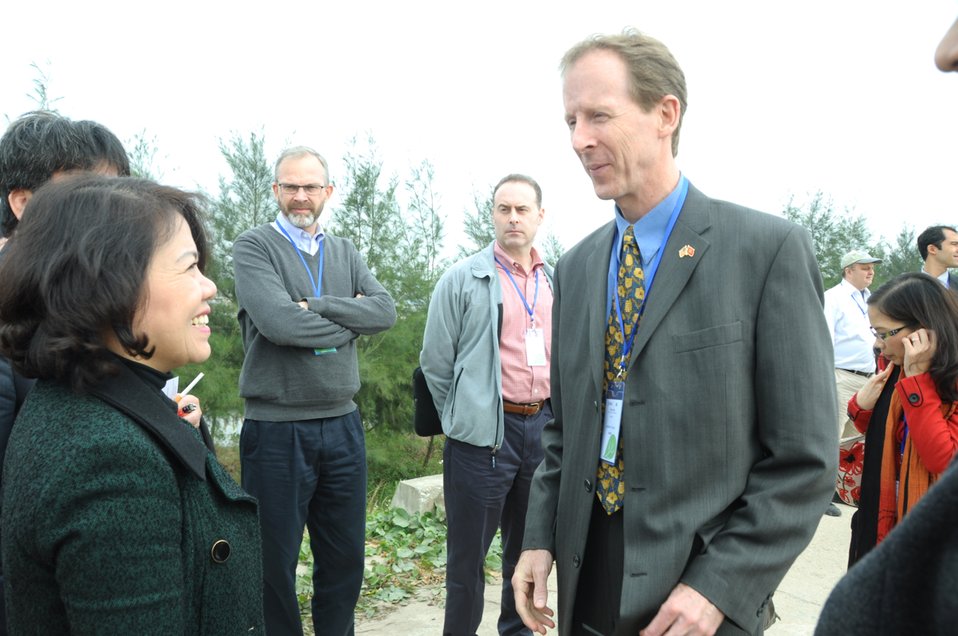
Mrs. Nguyen Thi Xuan Thu, Vice Minister of Agriculture and Rural Development, talks to USAID Mission Director Joakim Parker during the site visit.

Quat Lam, Nam Dinh. January 16, 2014.